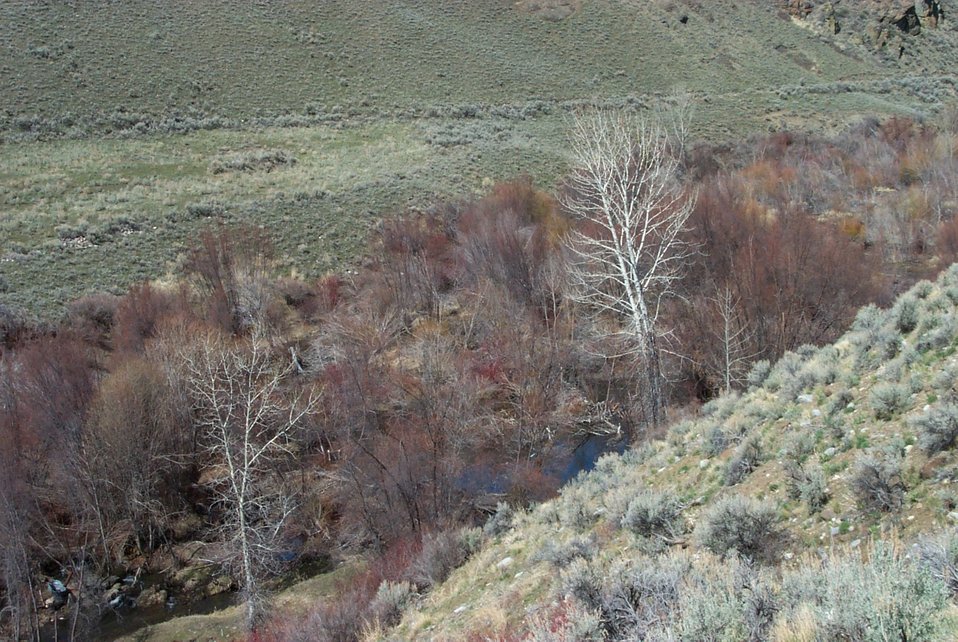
Salmon Field Office Realty Public access Exchange UCSC Upper Columbia Salmon Clearwater District